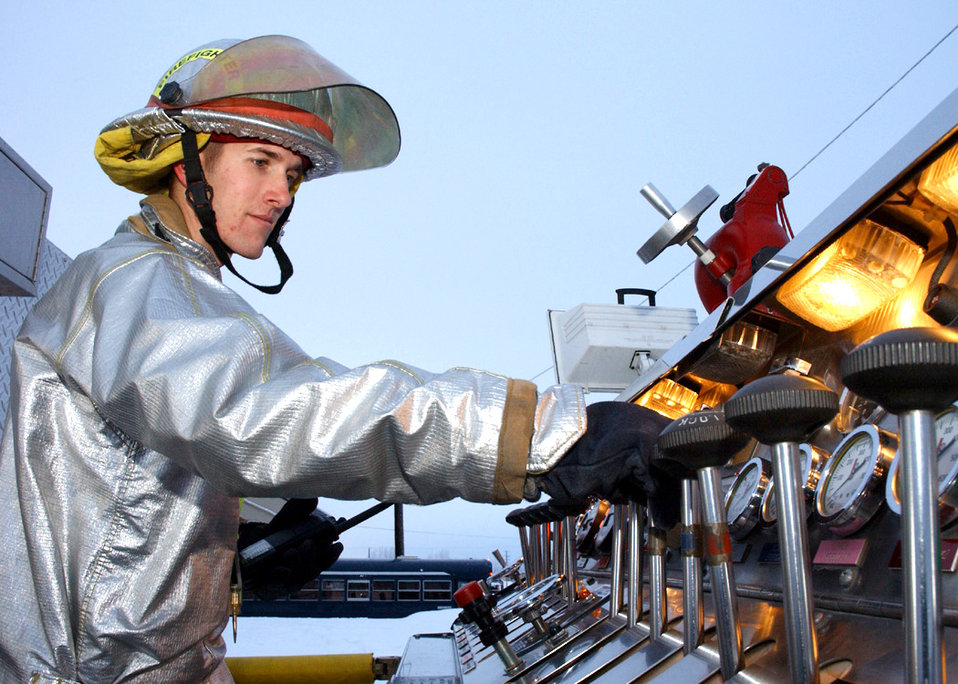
Putting out the flames

EIELSON AIR FORCE BASE, Alaska -- Airman 1st Class Christopher Fochs operates the fire truck pump controls during the wing's major accident response exercise here Dec. 15. The MARE is used to test the wing's ability to respond to a crisis. Airman Fochs is assigned to the 354th Civil Engineer Squadron.